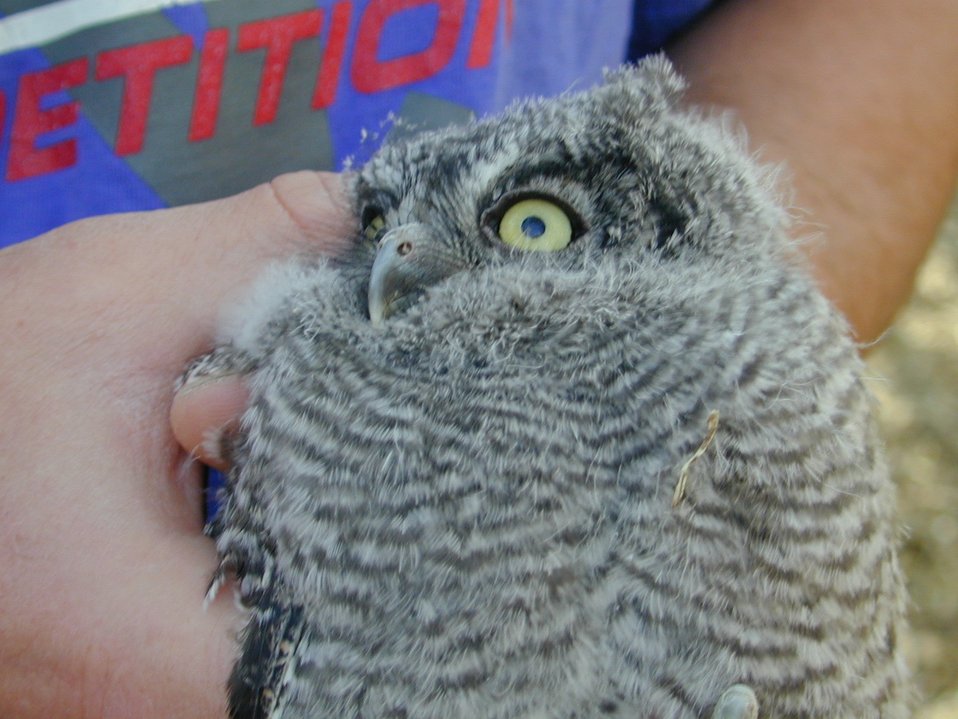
Environmental Education Fire Workshop Timberline High School Fall 2000